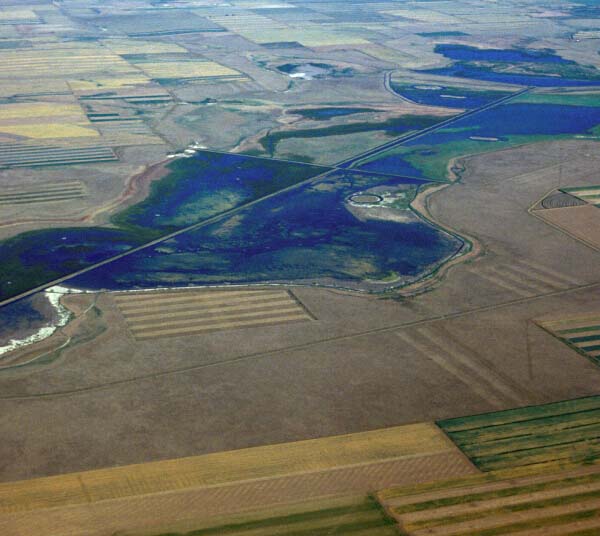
Aerial photograph of Benton Lake

The lands of Benton Lake National Wildlife Refuge were established to protect and provide habitat for migratory birds that cross State lines and international borders and are by law a Federal trust responsibility.

The refuge is of great value to waterfowl and shorebirds, as well as other migrating water-dependent bird species, because of the diversity of wetland and upland habitats that provide for the diverse life cycle needs of these species.